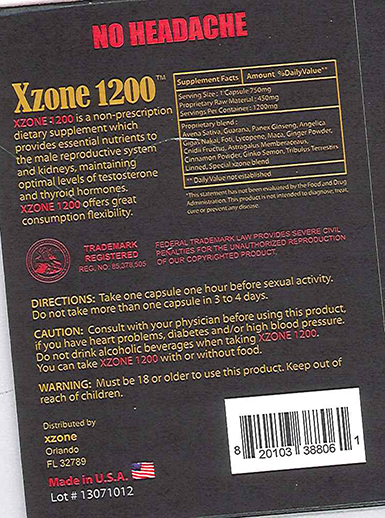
RECALLED – Dietary Supplement

April 1, 2014 – Product Recall – Nova Products, Inc. Issues Voluntary Nationwide Recall of Dietary Supplements with Undeclared Active Pharmaceutical Ingredients.